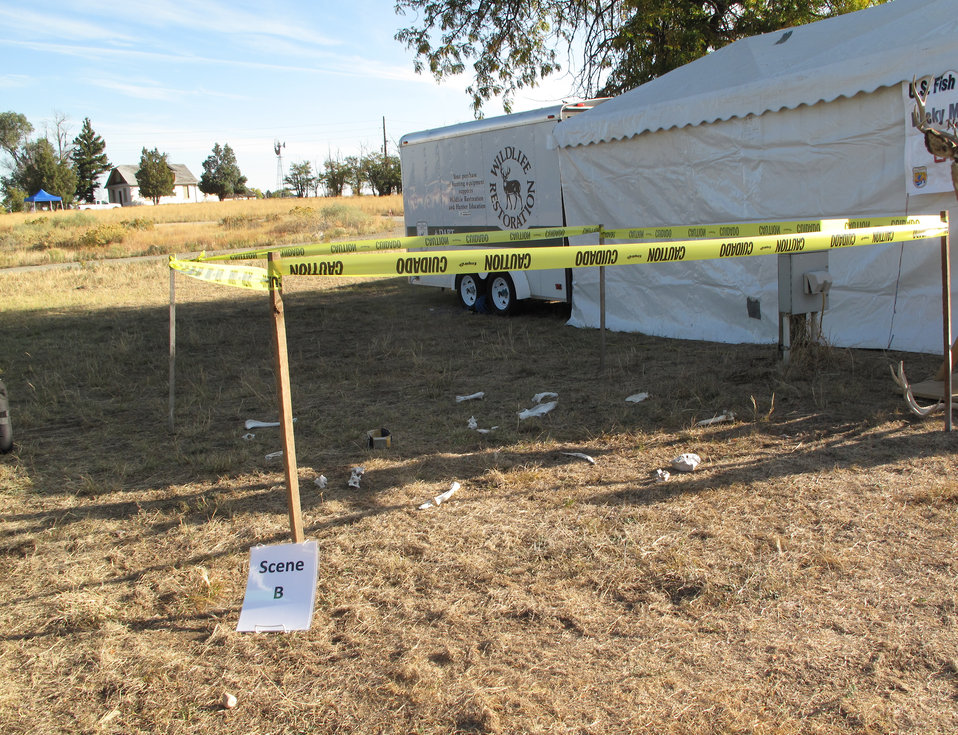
Refuge Round-up 2010

CSI crime scene.